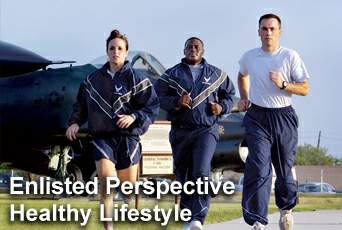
'Perspective' highlights healthy lifestyles

In his latest